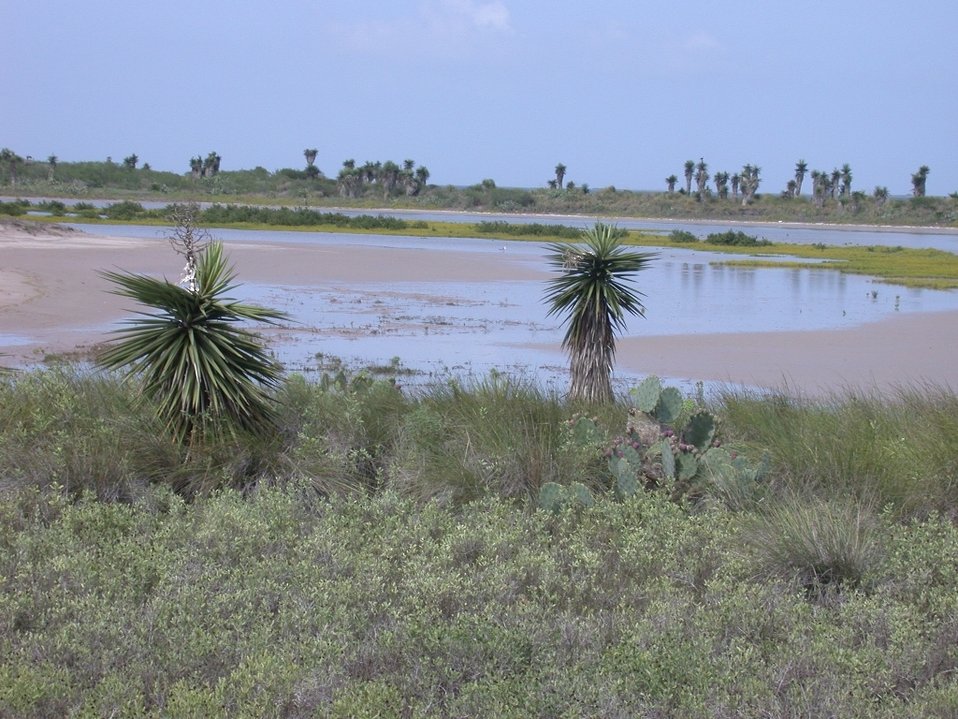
Laguna Atascosa NWR inlet

Cactus and palms frame a scenic bayside inlet at Laguna Atascosa National Wildlife Refuge in Texas.(USFWS)